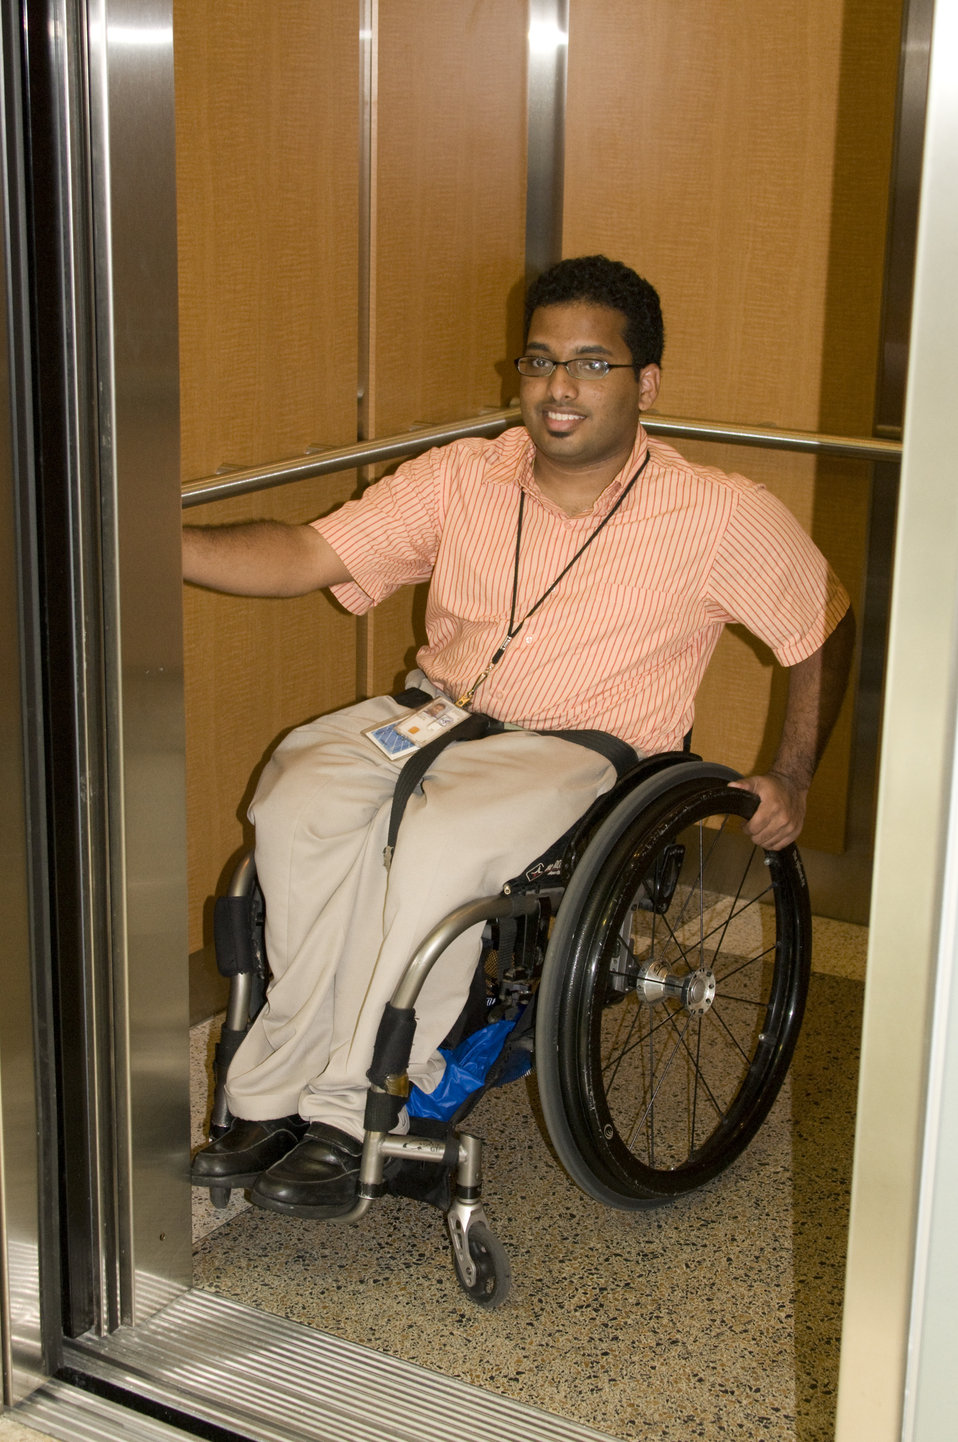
The man picture here, was seated in her wheelchair, and had boarded an elevator in a highly-accessible building on one of the Centers for Disease Control's (CDC) Atlanta, Georgia campuses. He was in the process of pressing the desired floor button where he was to conduct his business. Note the height at which the selection buttons were situated, making them universally-accessible for all passengers.